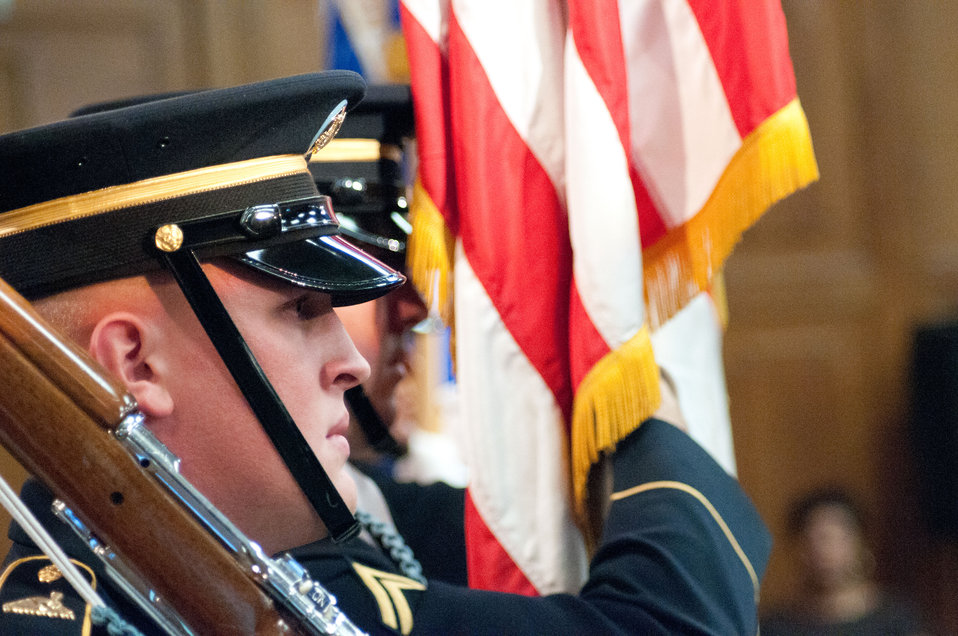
United States Department of Agriculture 63rd Secretary’s Annual Honor Awards held in the Thomas Jefferson Memorial Auditorium in Washington, D.C. on Wednesday, September 14, 2011. The Armed Forces Color Guard presented the colors and the “National Anthem.” Deputy Assistant Secretary for Administration Oscar Gonzales led the Pledge of Allegiance. Deputy Secretary of Agriculture Kathleen Merrigan provided opening remarks and introduction of Agriculture Secretary Tom Vilsack.